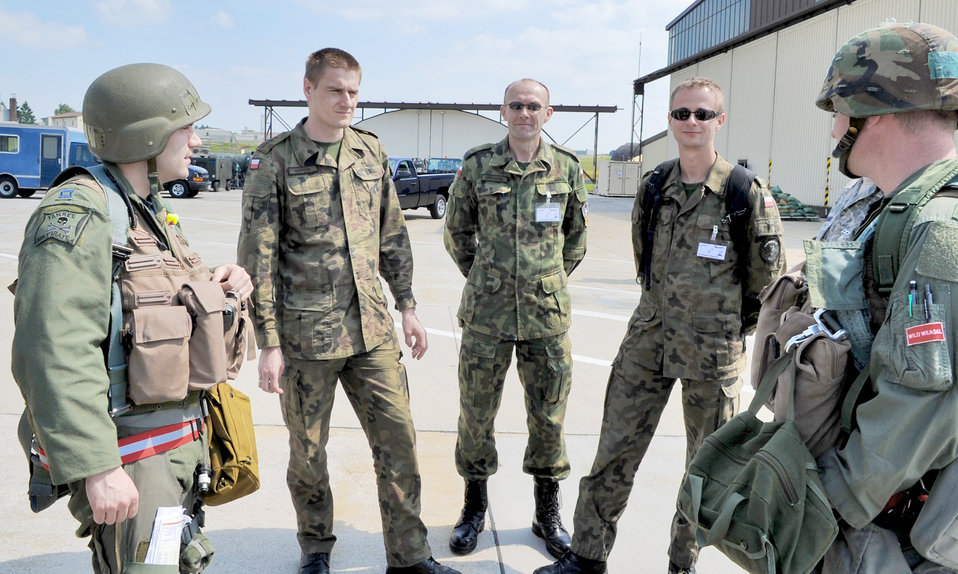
Polish team observes inspection

(Clockwise from the right) Lt. Col. Paul Murray and Capt. Robert Sandwith meet Polish air force members Capt. Chris Marciak, Maj. Andriej Pokladek and Lt. Mariusz Choszczewski during a U.S. Air Forces in Europe Operational Readiness Inspection June 23, 2010 at Spangdahlem Air Base, Germany. Colonel Murray and Captain Sandwith are pilots from the 22nd Fighter Squadron and the Polish airmen are assigned to the 32nd Air Tactical Base, Poland.